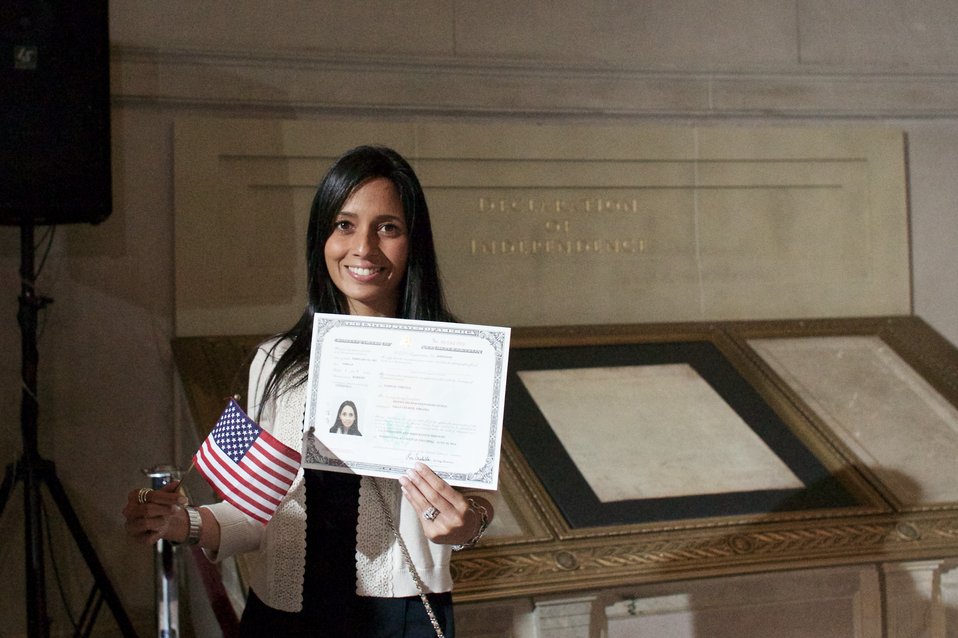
Naturalization Ceremony with Michelle Obama